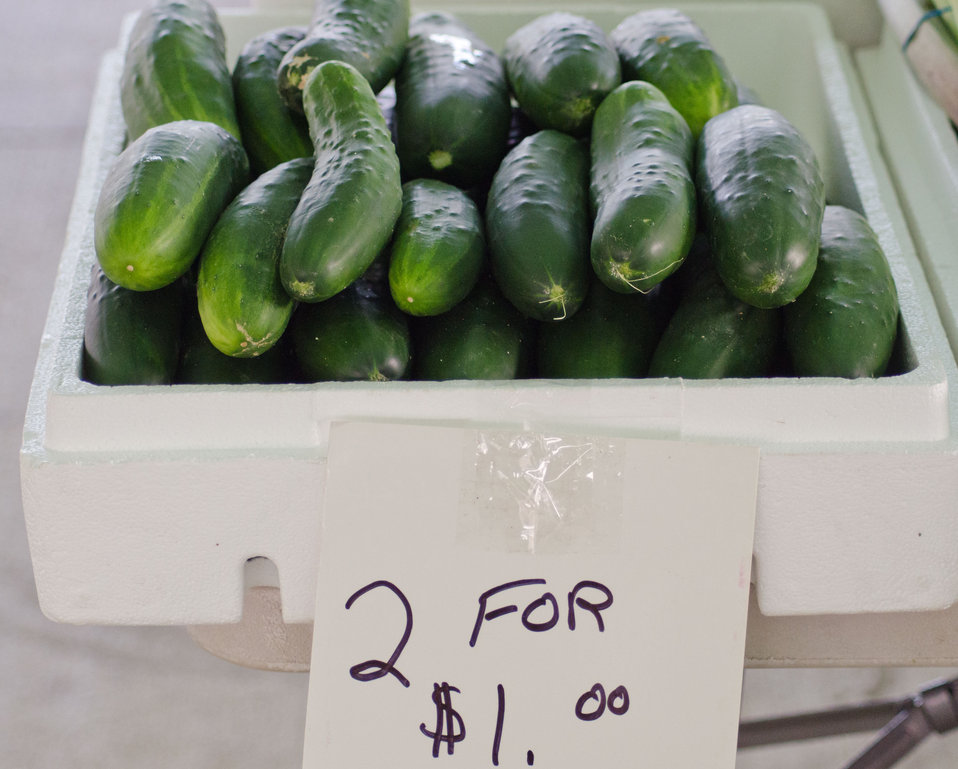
Fresh cucumbers for sale at the Bath County Agricultural Education and Marketing Center, Owingsville, KY, on Friday, July 15, 2011. The Center was the recipient of a $400,000 Rural Business Enterprise Grant. It has given farmers and producers from Bath and surrounding counties the opportunity to manufacture and market their locally grown and locally produced value-added and “Kentucky Proud” branded products, including but not limited to, fresh produce, artisan crafts and specialty food products. The Center is open year-round and allow residents to sell products in four different retail categories, including Kentucky products, regional crafts, “green” groceries and bakery/deli. Several producers expressed their gratitude for Rural Development’s assistance in making the center a reality. The project was made possible through funding the American Recovery and Reinvestment Act of 2009 enacted by the 111th United States Congress in February 2009 and signed into law on February 17, 2009, by President Barack Obama.